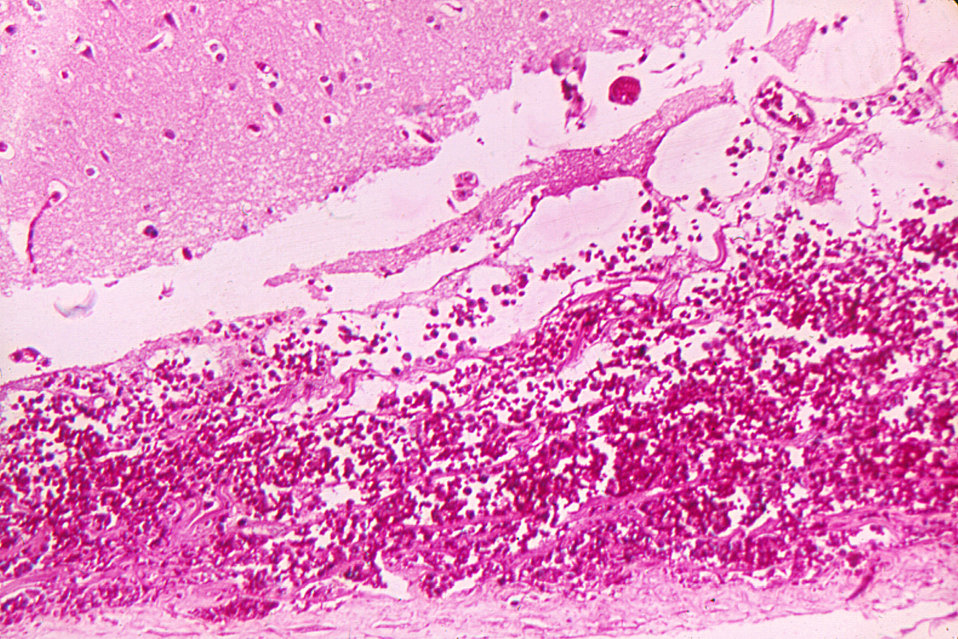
Meningeal hemorrhage due to anthrax.